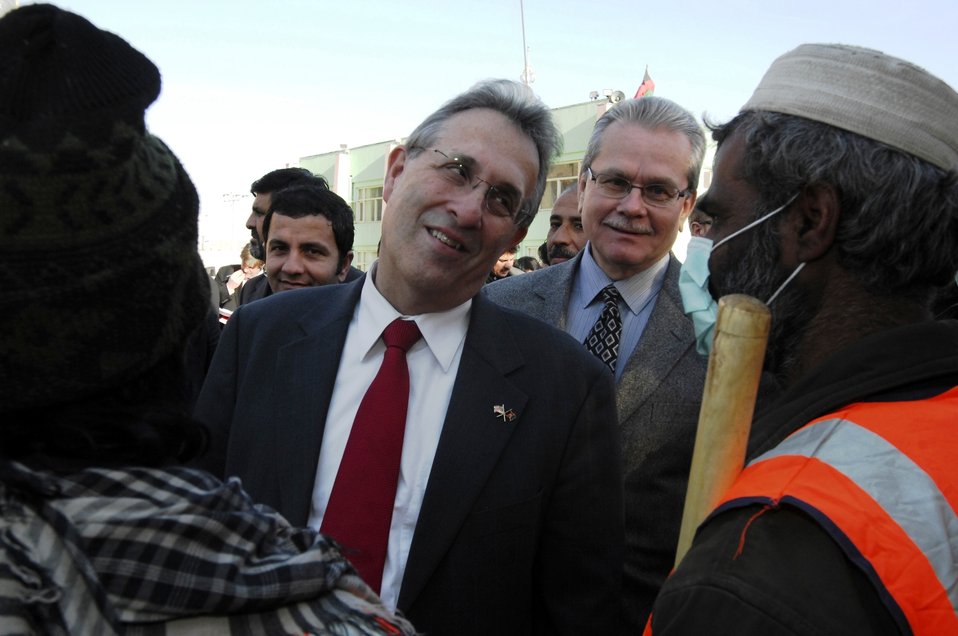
Care91